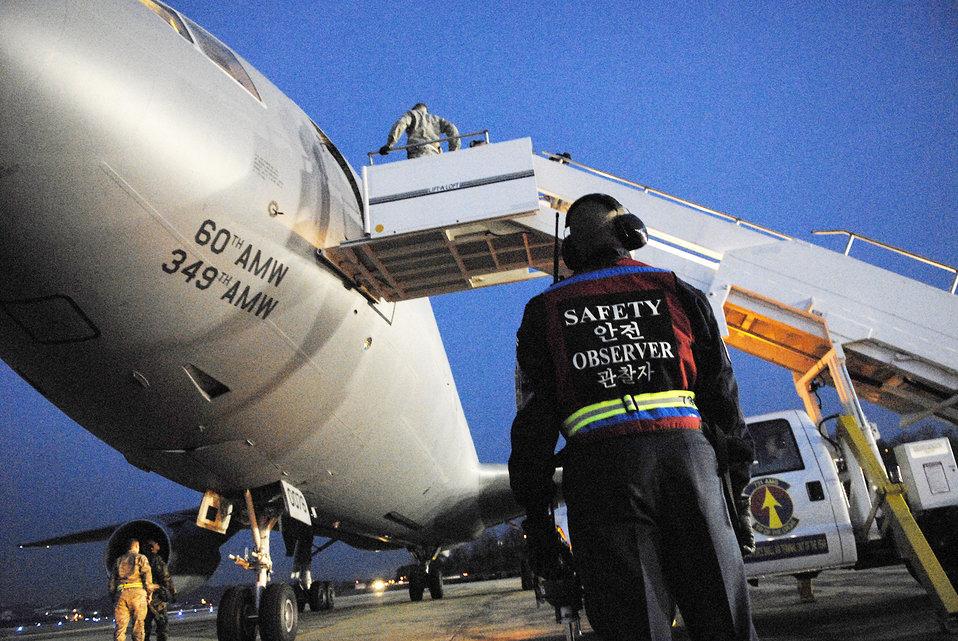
Safety first

Senior Master Sgt. Jimmie Miller observes as Airmen prepare to unload passengers from a Travis Air Force Base, Calif., KC-10 Extender Dec. 14, 2009, at Osan Air Base, South Korea. Sergeant Miller and the Airmen are with the 731st Air Mobility Squadron here.